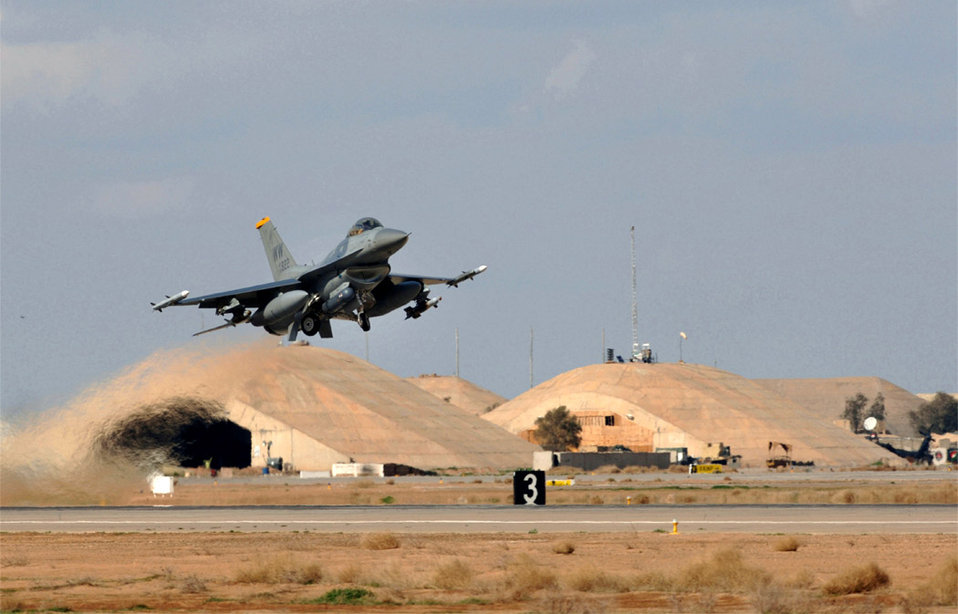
Airpower summary for Oct. 8, 2007

An F-16 Fighting Falcon takes off from Balad Air Base, Iraq. The agile fighters provide close-air support for coalition troops supporting Operation Iraqi Freedom.